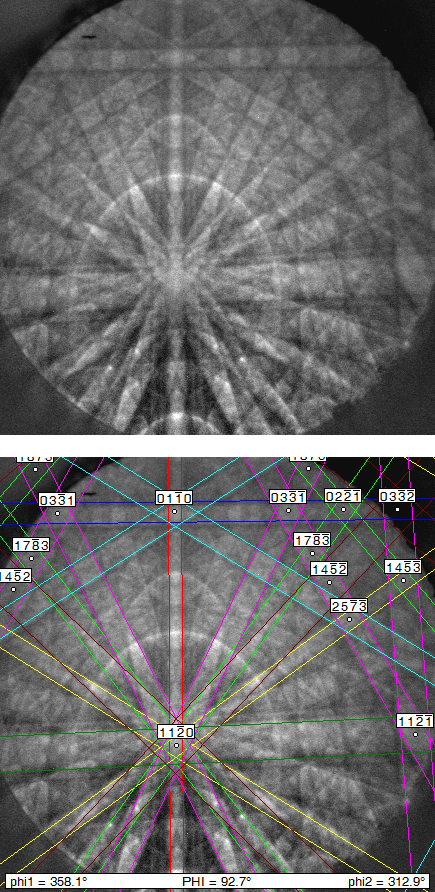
Transmission electron diffraction pattern from from a segment of an indium gallium nitride (InGaN) nanowire about 50 nanometers in diameter taken with an SEM using the new NIST technique clearly shows a unique pattern associated with crystal diffraction. Bottom: Same pattern but with an overlay showing the crystallographic indexing associated with the atomic structure of the material.